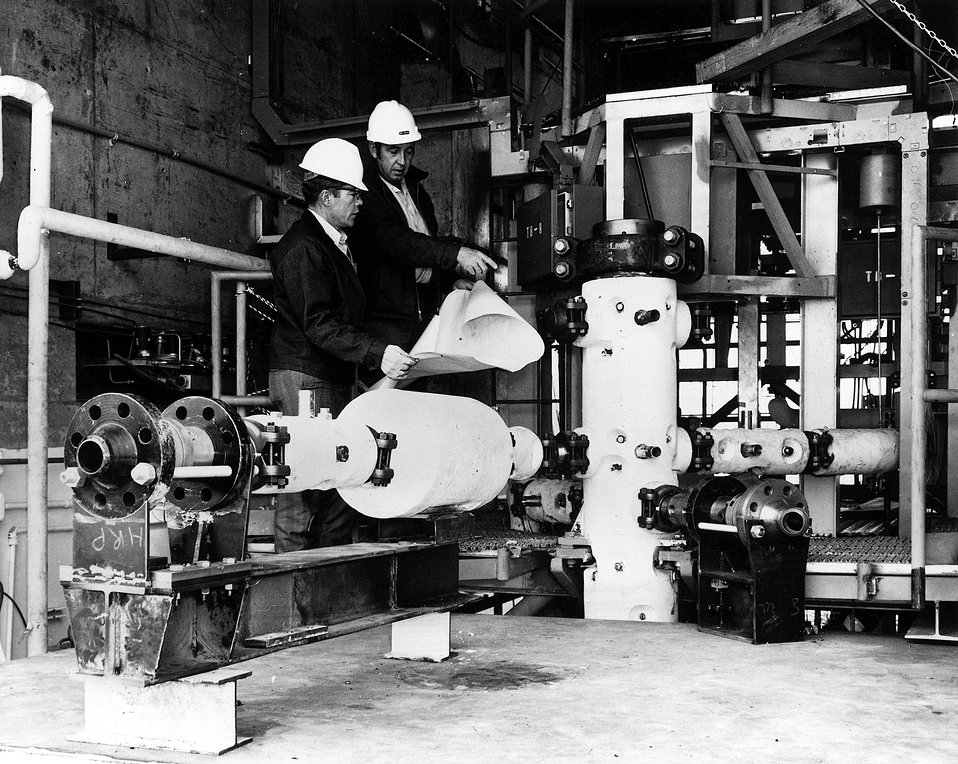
Emergency Core Cooling... Emergency core cooling research is being conducted to determine the interactions between emergency coolants and reactor fuels under various hypothetical accident conditions as a part of the AEC's continuing water reactor safety program. Circa 1972.